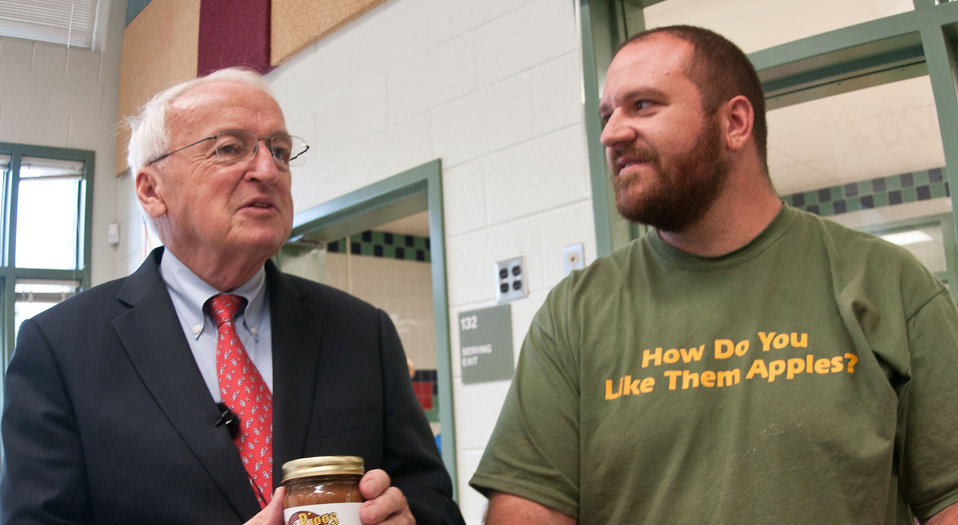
Under Secretary for Food, Nutrition and Consumer Services Kevin Concannon (l) and Bigg Riggs Farm owner Calvin Riggleman discuss the importance of children knowing the taste of produce from local farms, during a visit to Nottingham Elementary School in Arlington, VA, on Wednesday, October 12, 2011. Farmers from Bigg Riggs Farm in Hampshire County, WV, and Maple Avenue Market Farm in Vienna, VA were very popular with the students. Today's menu included roasted chicken, roasted butternut squash with dried cranberries, farm fresh mixed lettuce salad, turkey wraps, pita wedges, hot muffins, carrots, Asian pears and more.